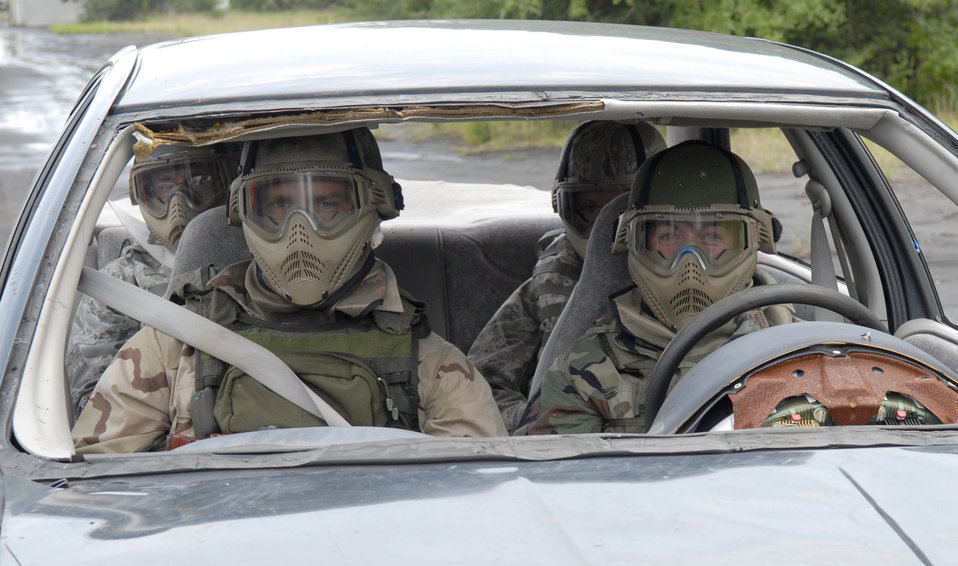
Defensive driving

Students wait for their turn to master the defensive driving course July 23, 2010, at Eglin Range, Fla.